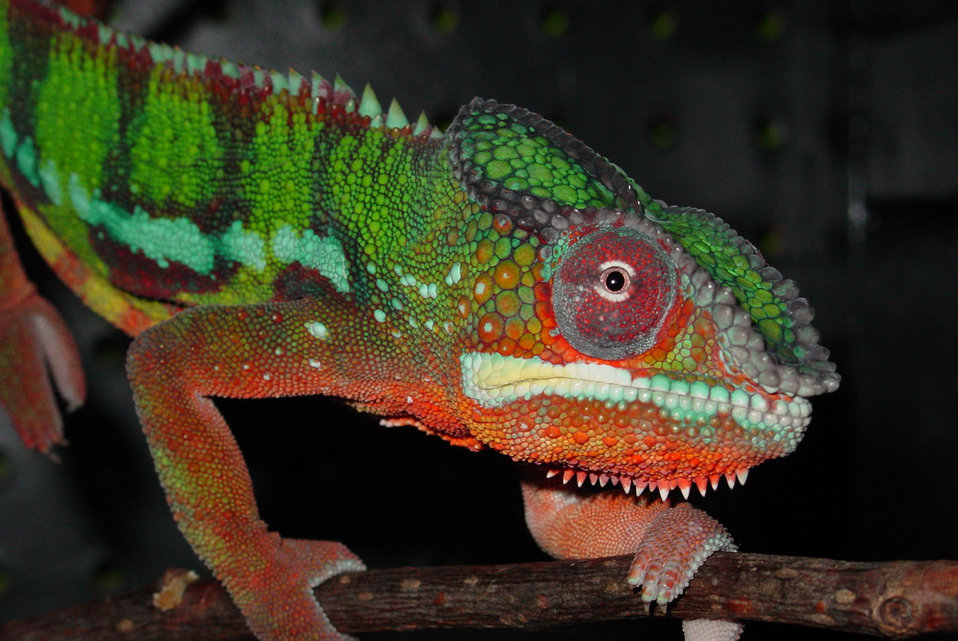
Chameleon

Male panther chameleon ambilobe.